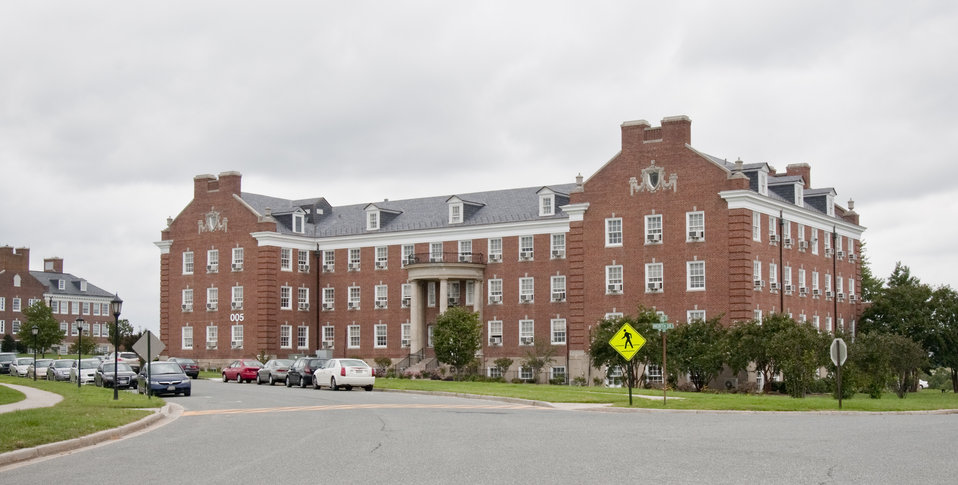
United States Department of Agriculture, Henry A. Wallace Beltsville Agricultural Research Center (building 004) is home to several science institutes, in Beltsville, MD, on Wednesday, September 21, 2011.